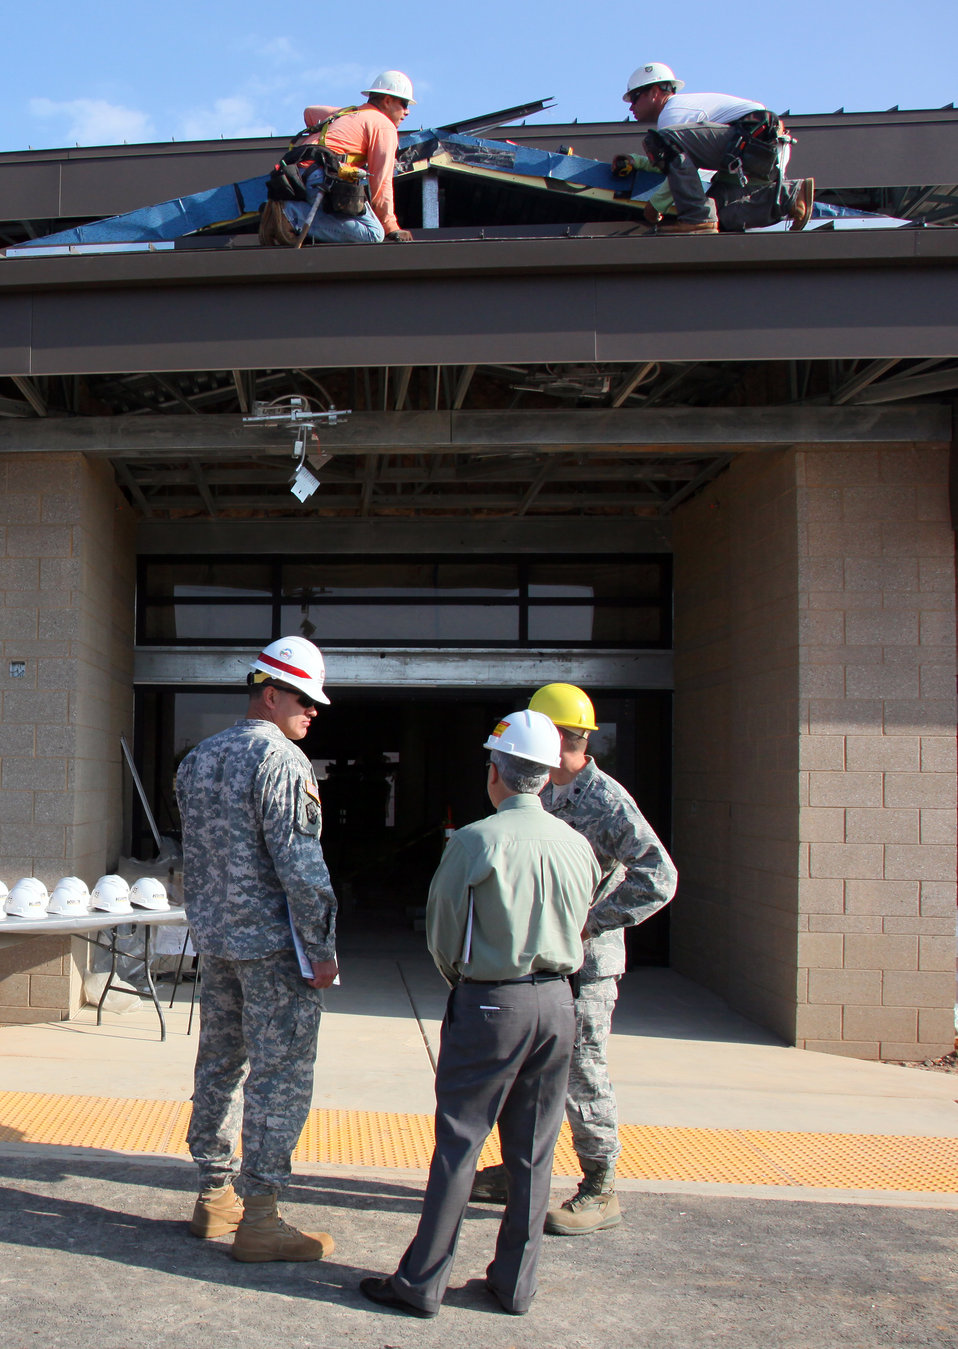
New Child Development Center nears completion at Beale

Workers put the finishing touches on the roof of the new Child Development Center at Beale Air Force Base outside of Marysville, Calif., Oct. 25, 2011. U. S. Army Corps of Engineers Sacramento District commander Col. Bill Leady (left) toured the military project with his district staff, contractors, and the base staff. The Sacramento District is administrating construction of the centrally located 38,000 square-foot center, capable of accommodating 280 children from the ages of six weeks through five years old.